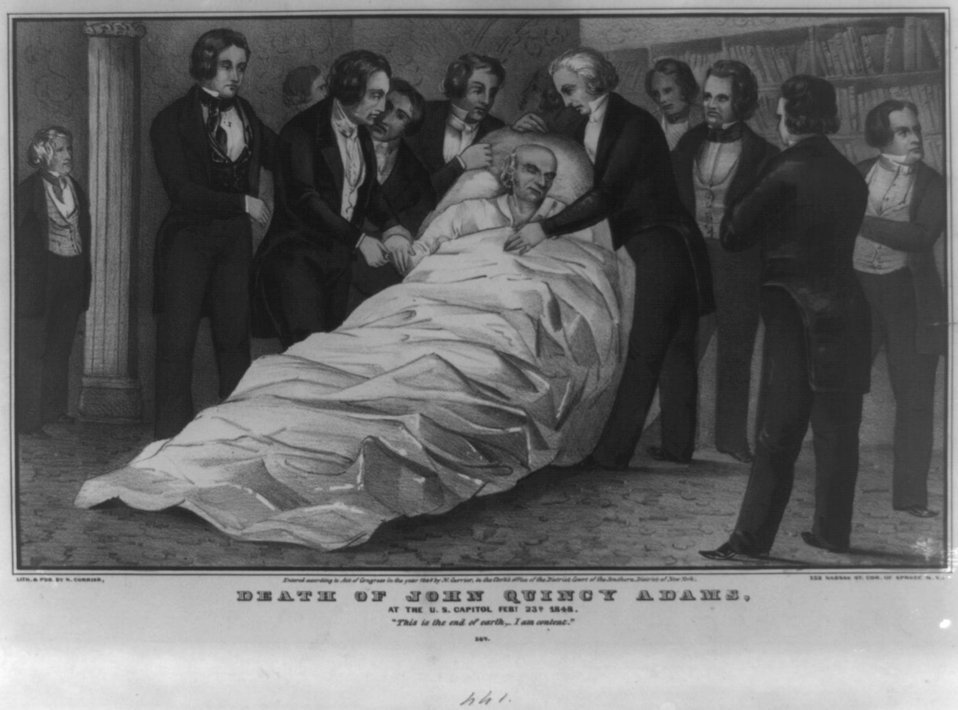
Death of John Quincy Adams

On February 21, 1848, Adams was at his seat in the House Chamber when he voted a loud 'no' to a resolution giving thanks to several generals for their service in the Mexican War. A few minutes later he collapsed. Adams was taken into the Rotunda and placed on a sofa in front of the east door in the hope that fresh air would revive him. Seeing no improvement, however, Adams was next taken into the speaker's office where he died two days later. His funeral was held in the House Chamber. One of the honorary pallbearers was a freshman congressman from Illinois, Abraham Lincoln. Print by Currier & Ives.